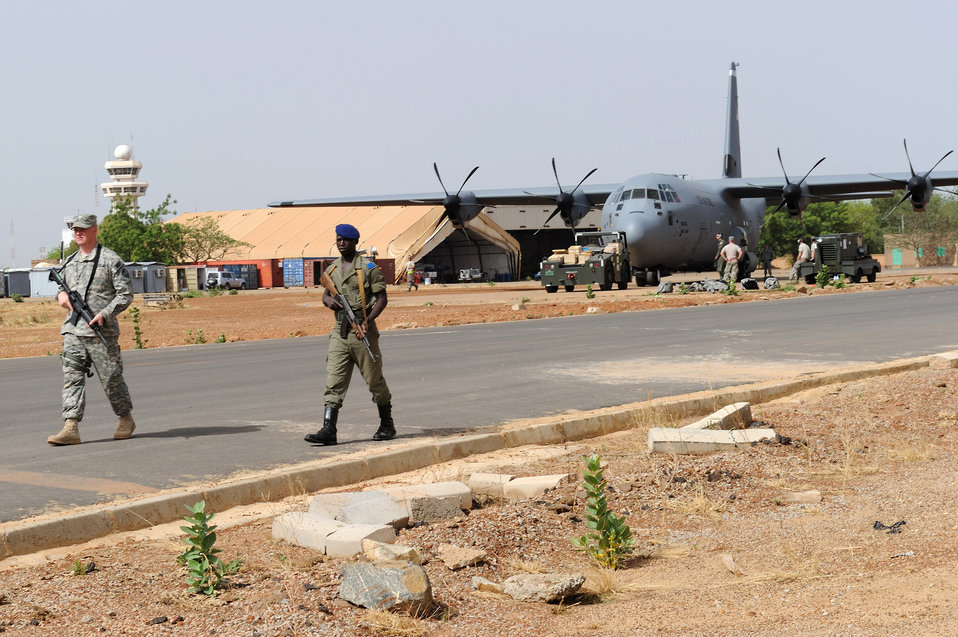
Airmen support Air Forces Africa in exercise

A joint U.S. Army and Burkinabe army security patrol provides airfield security while a C-130J Super Hercules prepares for departure with Burkinabe soldiers and equipment onboard for deployment to Mali in support of Exercise Flintlock 10 May 1, 2010, in Ouagadougou, Burkina Faso. The C-130J is deployed from Ramstein Air Base, Germany.